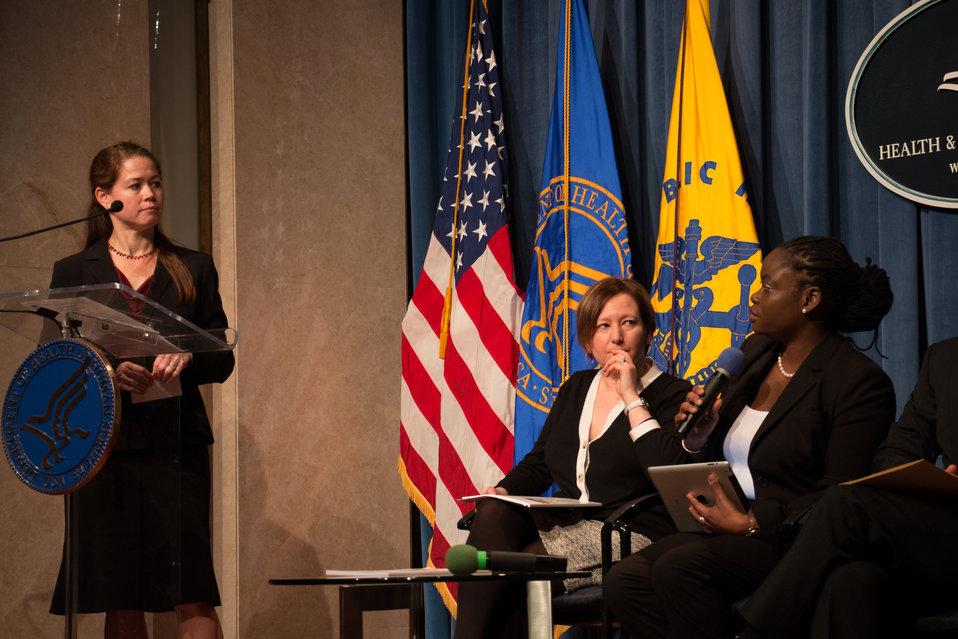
VHAP Launch (304 of 511)